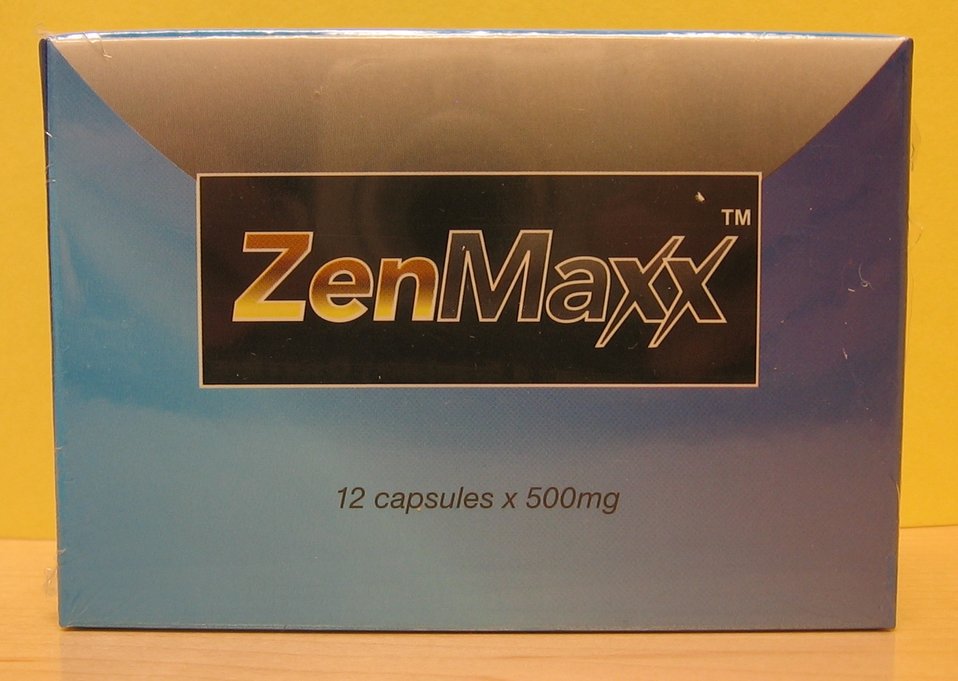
ZenMaxx

April 20, 2012 - The FDA is advising consumers not to purchase or use 'ZenMaxx,' a product promoted and sold for sexual enhancement. The product was found to contain undeclared aminotadalafil. For more information, go to www.fda.gov/Drugs/ResourcesForYou/Consumers/BuyingUsingMe...

And read this Consumer Update: Beware of Fraudulent ‘Dietary Supplements’